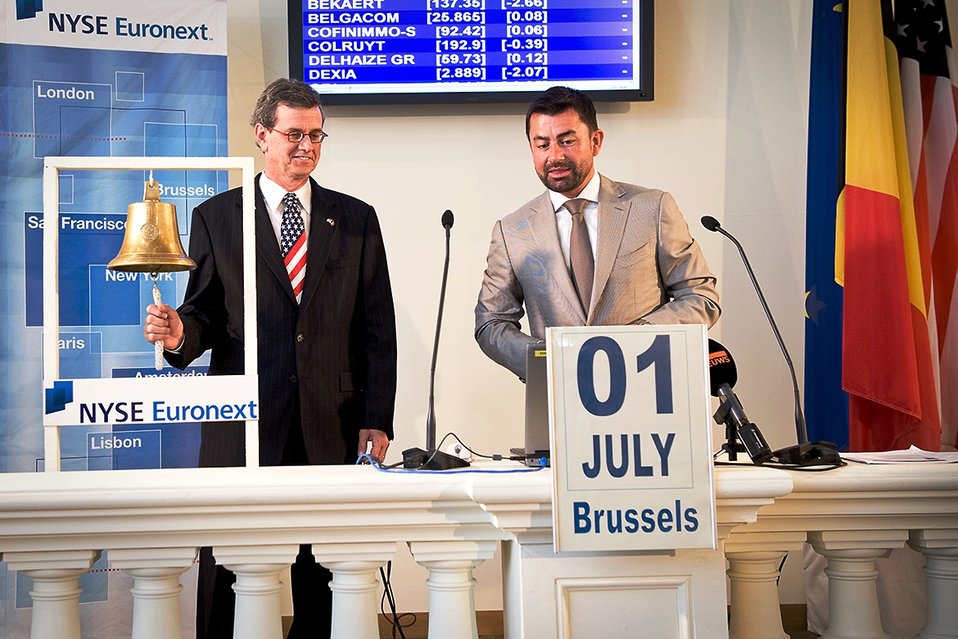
July 4th Celebration at U.S. Embassy in Belgium

U.S. Embassy Brussels celebrates the America's Independence Day on July 1, 2010, in Brussels, Belgium.